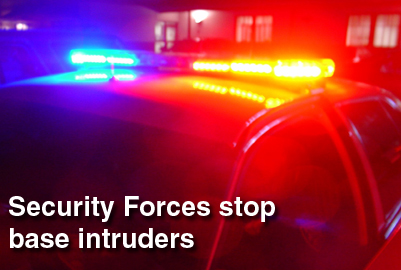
Security Forces stop base intruders

Two alleged car thieves ran through one of the Luke Air Force Base gates and were confronted immediately by 56th Security Forces Squadron patrols at approximately 11 p.m. Feb. 22.